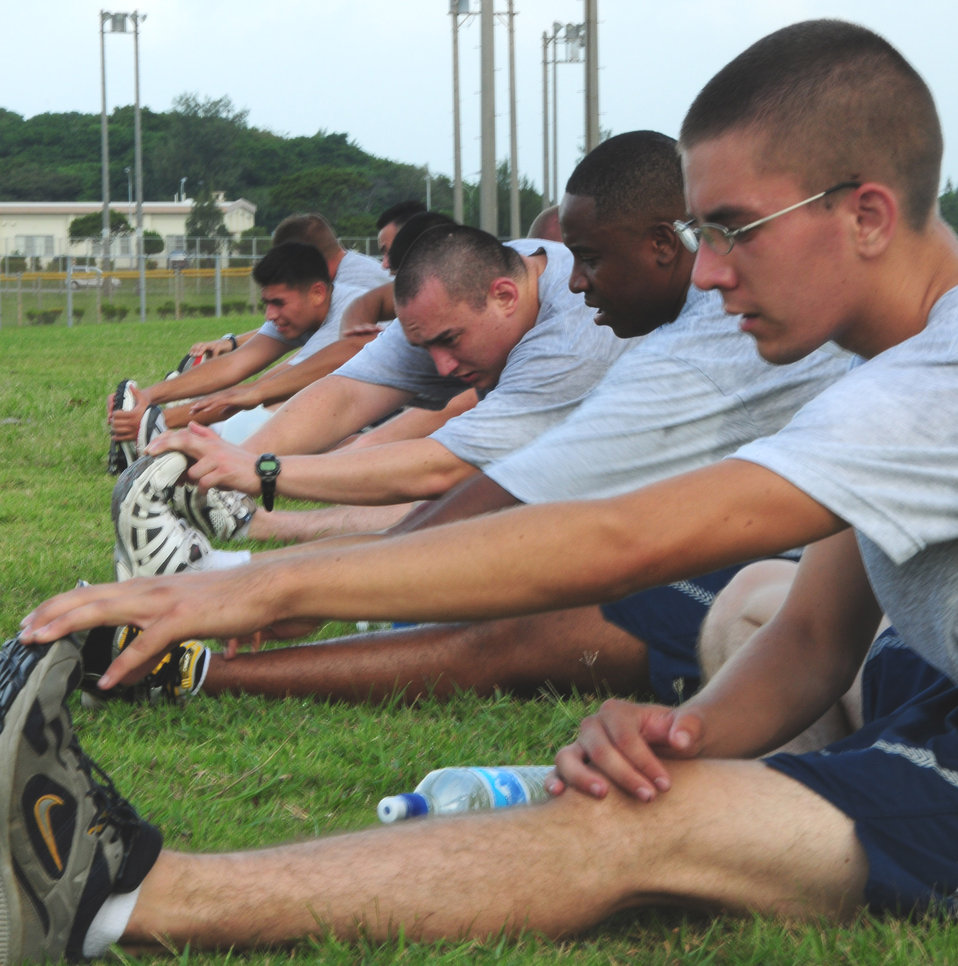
Bringing it back to basics

Members of the 18th Logistics Readiness Squadron perform stretches as part of their routine cool down after a typical 5K run at Kadena Air Base, Japan. Their vision for future of the program is to build a culture that encompasses the concept of Fit to Fight and Fit For Life.